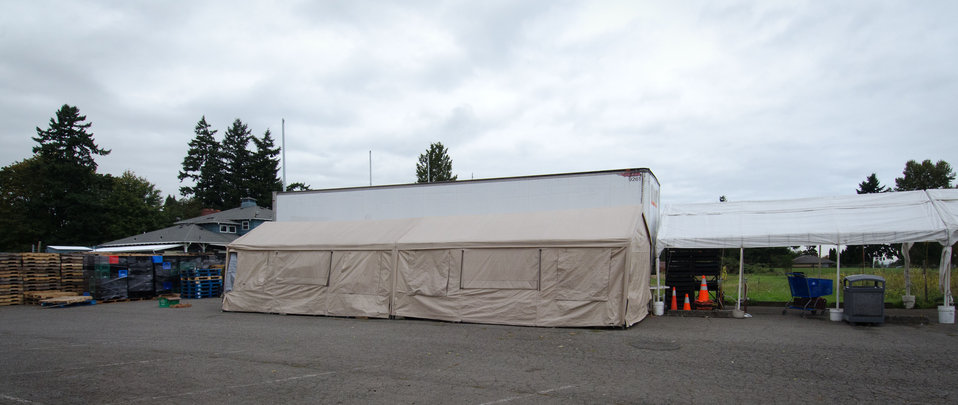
Tukwila Pantry produce is stored, sorted and boxed for individuals and families in these tents and trailer, in Tukwila. WA, on Thursday, October 20, 2011. The pantry provides monthly food bank services to individuals and families in cities of Tukwila, SeaTac, Burien and the Boulevard Park community. Congregate meal service is held each Tuesday at their location in the Riverton Park United Methodist Church. The church provides some funds, several large rooms, and outdoor operating space for the pantry’s food distribution, shipping container storage units, trailer, tents, shelters and refrigeration truck. The pantry's weekly Tuesday’s Table provides 150 hot meals to seniors, low-income families, homeless individuals and those in transition. Additionally, emergency referral services are provided to assist individuals connecting with agencies that can address their needs. Executive Director Joe Tice grew up in Tukwila and feels compelled to give back to economically challenged community of 25,000 families in 3,000 households. “Since the pantry’s founding in 2000, census figures show poverty has risen 300%,” said Joe Tice. “85-95% of elementary school children are enrolled in SNAP (U.S. Department of Agriculture Supplemental Nutrition Assistance Program).” At the pantry’s height, it delivered 3.8 million pounds of food (2009), but with the economic downturn Tice projects 2011 deliveries to total 2.6 million pounds. Tice, considers Tukwila Pantry as one of the smaller distribution points in the greater Seattle area. Some canned and dry goods are provided by
The Emergency Food Assistance Program (TEFAP) a Federal program that helps supplement the diets of low-income needy persons, including elderly people, by providing them with emergency food and nutrition assistance. A significant amount of the pantry’s food comes through Northwest Harvest, Washington's only nonprofit statewide food bank distributor; and Food Lifeline, the largest nonprofit food distributor in the state who solicit, receive, and distribute over 24 million meals of food to nearly 700,000 people through our network of 300 food banks (such as Tukwila Pantry), shelters and meal programs.